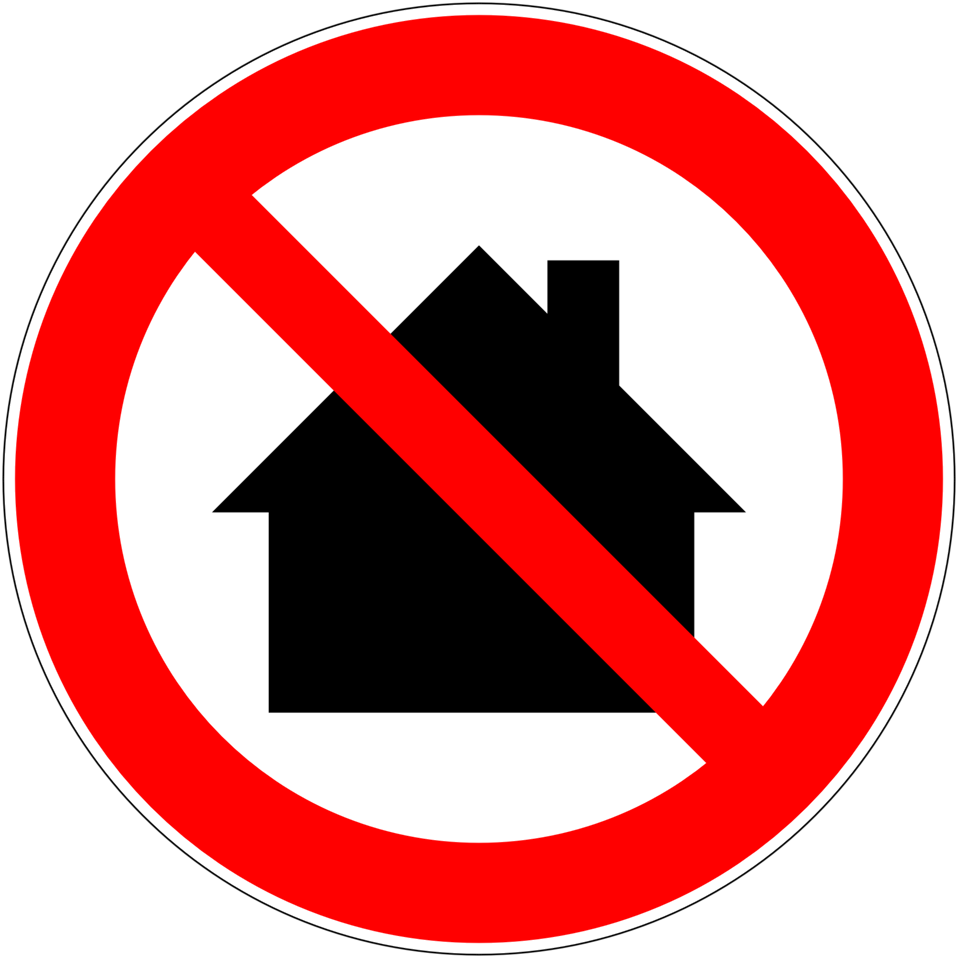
Deutsch: Nicht in Wohngebieten verwenden, Verbotszeichen D-P031 nach DIN 4844-2 Do not use in residential areas, prohibition sign D-P031 according to German standard DIN 4844-2